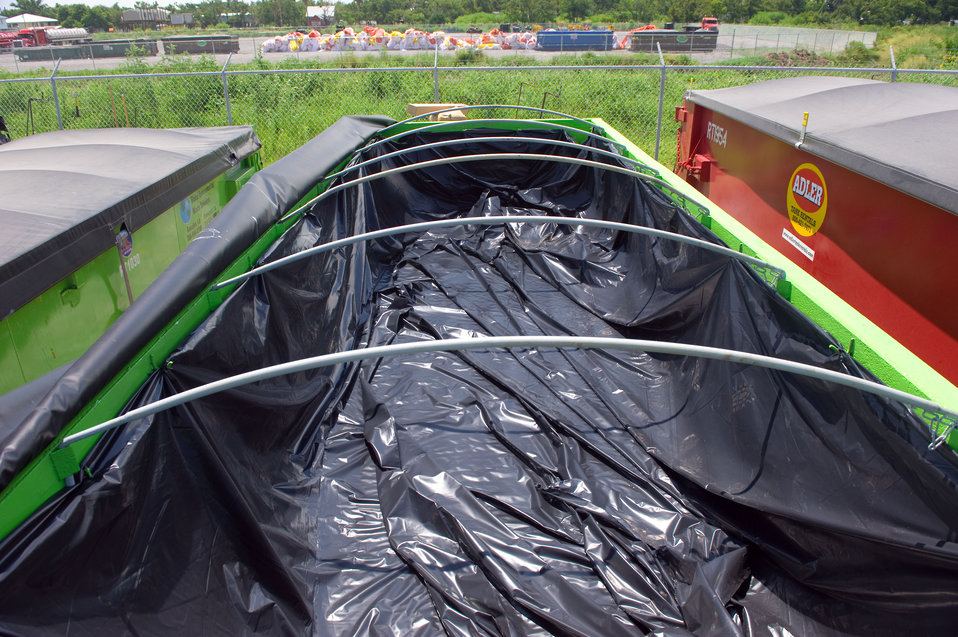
August 7, Waste containers lined to prevent leaks

Roll off containers are lined with plastic to contain any liquid oil waste during transport to disposal site.